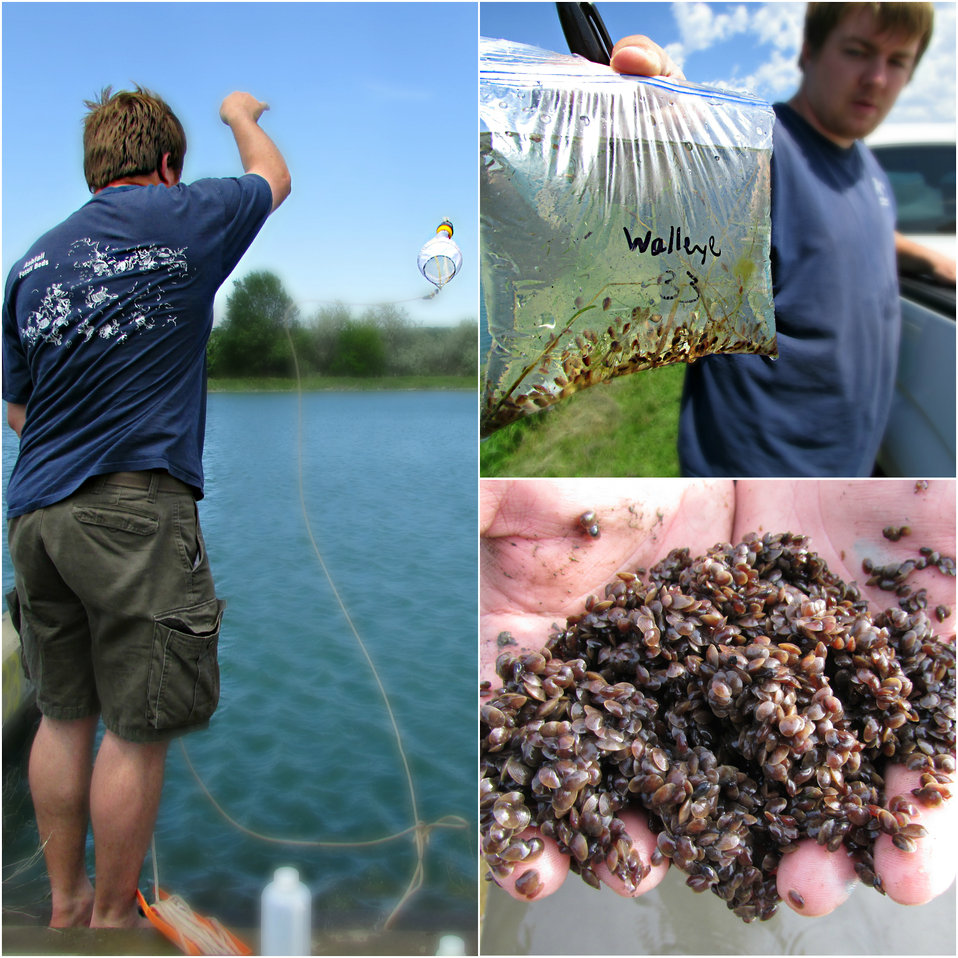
Clam Shrimp

Today we got a lesson on our enemy, the clam shrimp.

Clam shrimp thrive in areas that have water seasonally, like ditches and our earth ponds. The shrimp compete with zooplankton (which our fish need to eat) and clog up our screens and nets.

Oklahoma State University grad student Bill Mausbach collected clam shrimp samples, which will be used in a study on how we can control the pests. This image shows how he collected them and how numerous they really are.